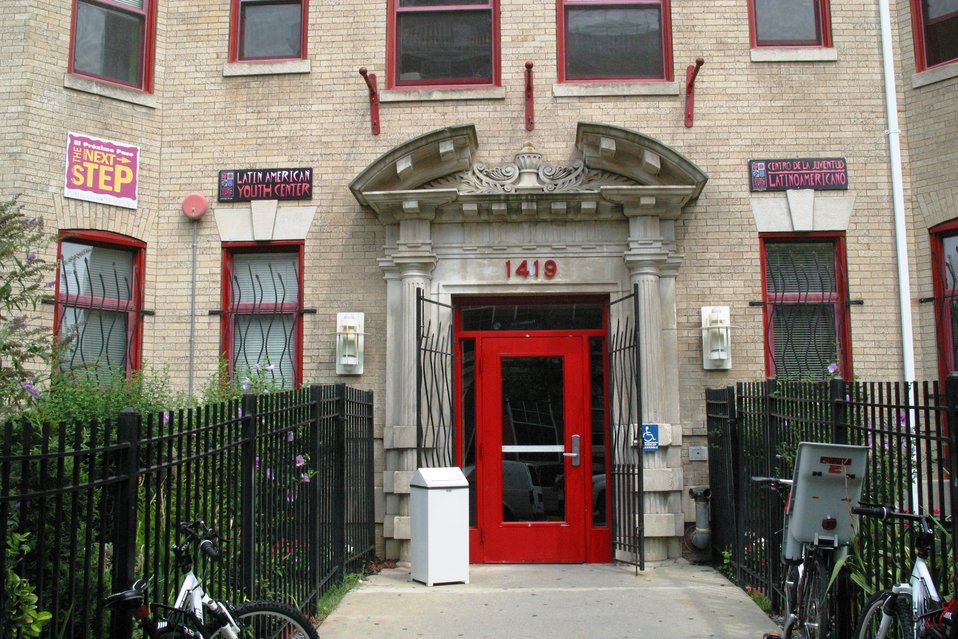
Connect 2 Compete: LULAC 8.7.12

FCC Chairman Julius Genachowski joined representatives from Connect2Compete (C2C), Redemtech, the League of United Latin American Citizens (LULAC), and the Latin American Youth Center (LAYC) to announce the launch of a nationwide computer recycling and donation effort to support C2C’s efforts to close the digital divide.